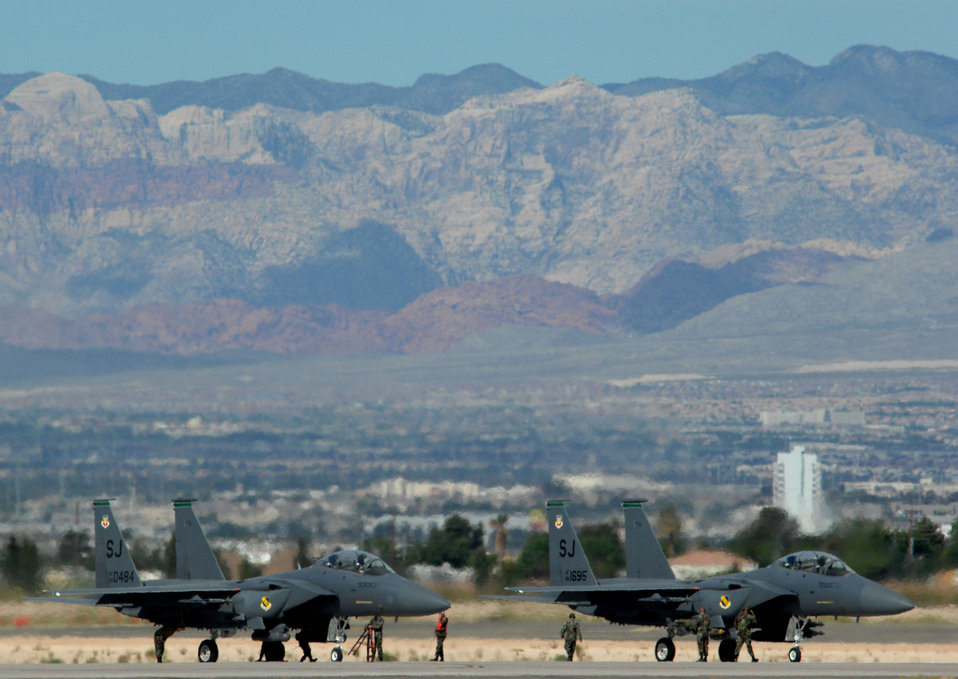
Green Flag launches Strike Eagles into the air

Two F-15E Strike Eagles prepare to launch in support of Exercise Green Flag April 24 at Nellis Air Force Base, Nev. Green Flag is an Air Combat Command pre-deployment exercise for units who perform close-air support. The training exercise, which began April 19 and runs through May 4, mirrors many of the irregular warfare-conditions aircrews will see while fighting the war on terrorism. During Green Flag, aircrews will try to learn better ways to employ airpower within an irregular warfare environment. The F-15Es are from Seymor Johnson AFB, N.C.